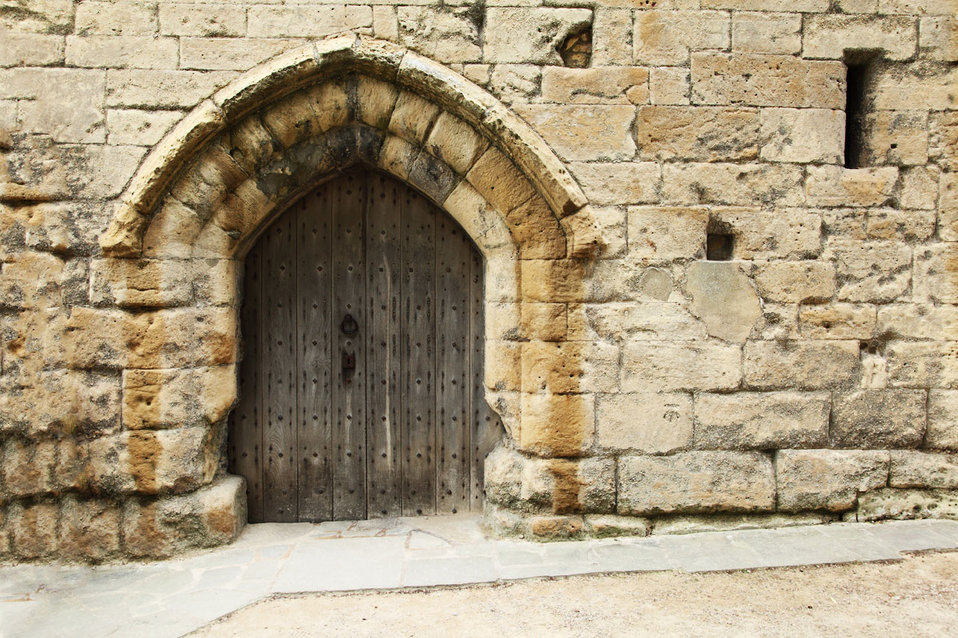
Old castle gate

Small old wooden castle gate and stone wall.